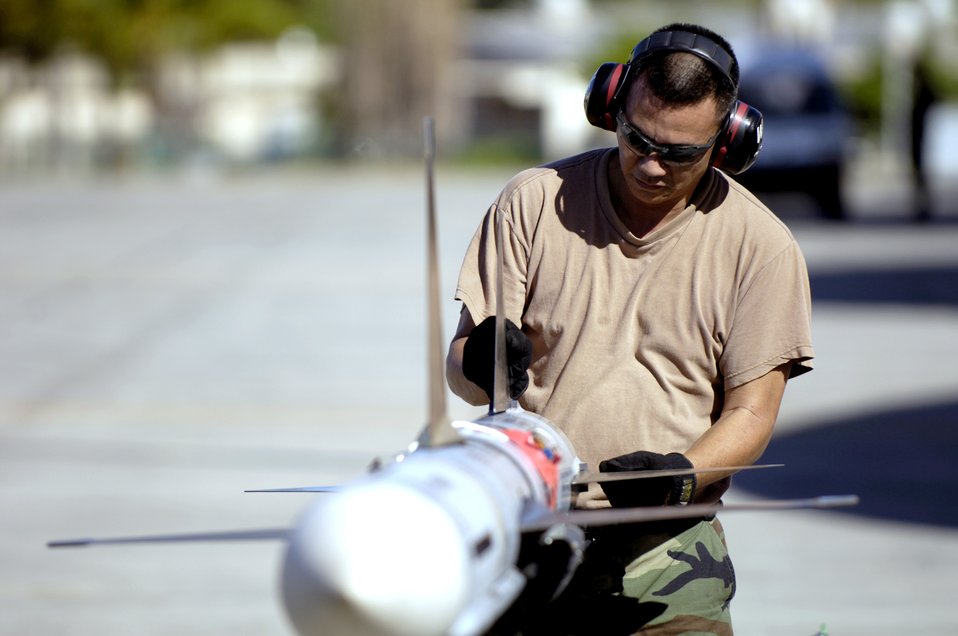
Total force at work in RIMPAC

Staff Sgt. Arthur Hamabata installs fins on an AIM-7 Sparrow missile at Hickam Air Force Base, Hawaii, on July 16 during the Rim of the Pacific Exercise 2006. Sergeant Hamabata is with the Hawaii Air National Guard's 154th Aircraft Maintenance Squadron.